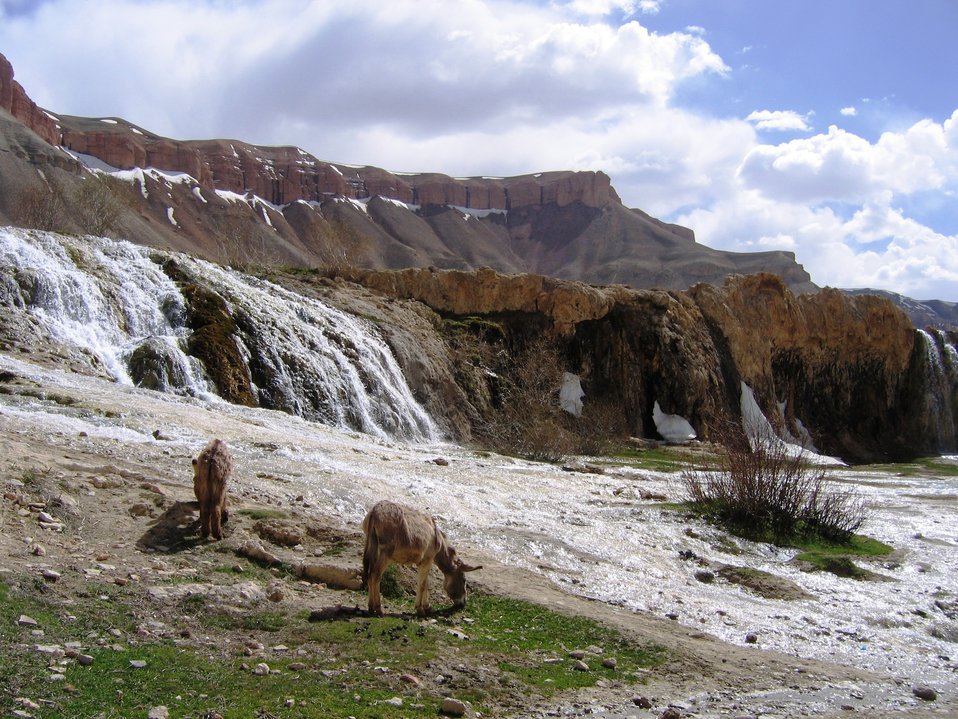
bamiyan 042908

The beauty of the area’s six cobalt-blue Band-e-Amir lakes always stuns visitors to central Bamyan province. Natural travertine dams, created by calcium deposits over many years, support the lakes. They stretch across the valley in long graceful arcs, and merge into a strikingly beautiful landscape of stone, desert, and water. The vistas rival those of national parks anywhere in the world.
USAID, through its implementing partner the Wildlife Conservation Society (“WCS”), has been working since 2006 to develop the institutions and foster the consensus needed for the formation of a national park in the lakes area. The efforts ultimately resulted in the Earth Day declaration in 2009, of Band-e-Amir as Afghanistan’s first national park by the Director General of Afghanistan’s National Environmental Protection Agency (NEPA).
Afghanistan’s Environment Law requires local management of protected areas. To fulfill that mandate, WCS initially educated the residents in the 13 villages located within the territory of the park about the economic opportunities that national park status would provide. The Band-e-Amir Protected Area Committee (BAPAC) recruited villagers to be members. BAPAC and WCS jointly prepared a management plan for the park, and WCS assisted local officials in successfully navigating the national park proposal process.
With USAID support, WCS is now training rangers to protect the flora and fauna in the park, and is educating the provincial and national government officials who must manage park operations and ensure sustainability. WCS continues to help the government develop laws and policies on protected areas and species, and community-based natural resource management.
In anticipation of national park status, local entrepreneurs had already begun building small shops, restaurants, and hotels to serve tourists. USAID-funded partners provided guidance to help them place these structures away from the most ecologically sensitive areas. Now that the park has achieved official status and protection, the local people will have the opportunity to protect, preserve, and profit from this beautiful landscape.